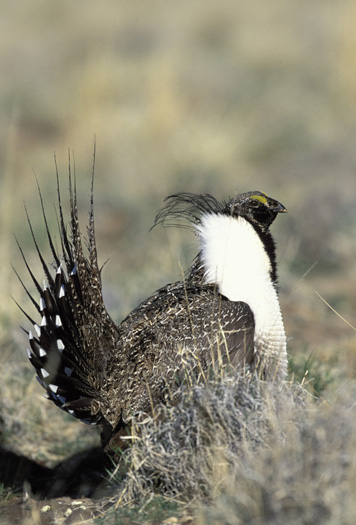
Greater sage grouse - Oregon Fish and Wildlife Office